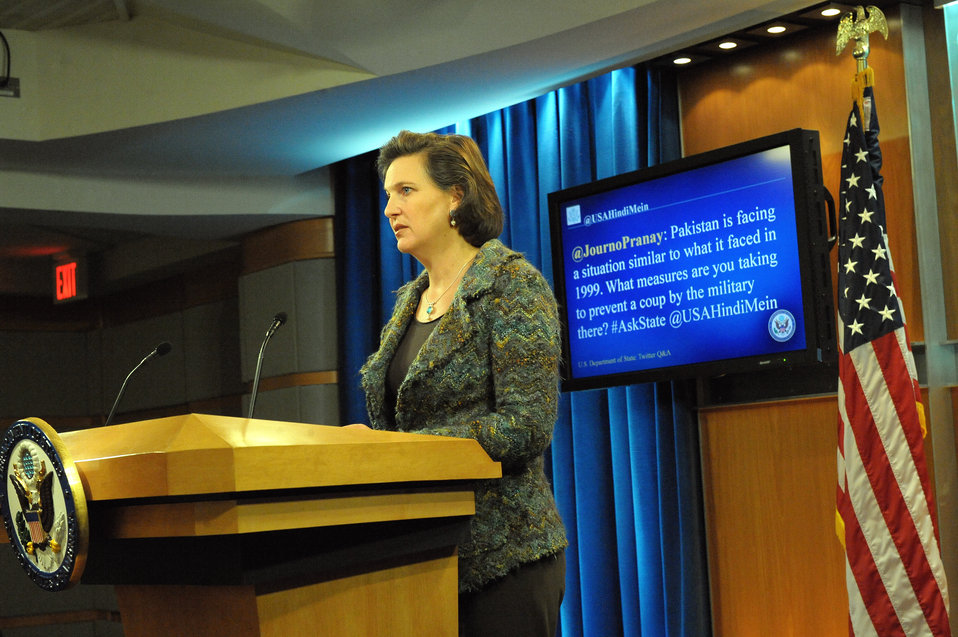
Spokesperson Nuland Responds to a Question from @USAHindiMein

Victoria Nuland, Spokesperson for the U.S. Department of State, answers a question selected from the Department’s official Hindi Twitter feed, @USAHindiMein, on January 13, 2012.